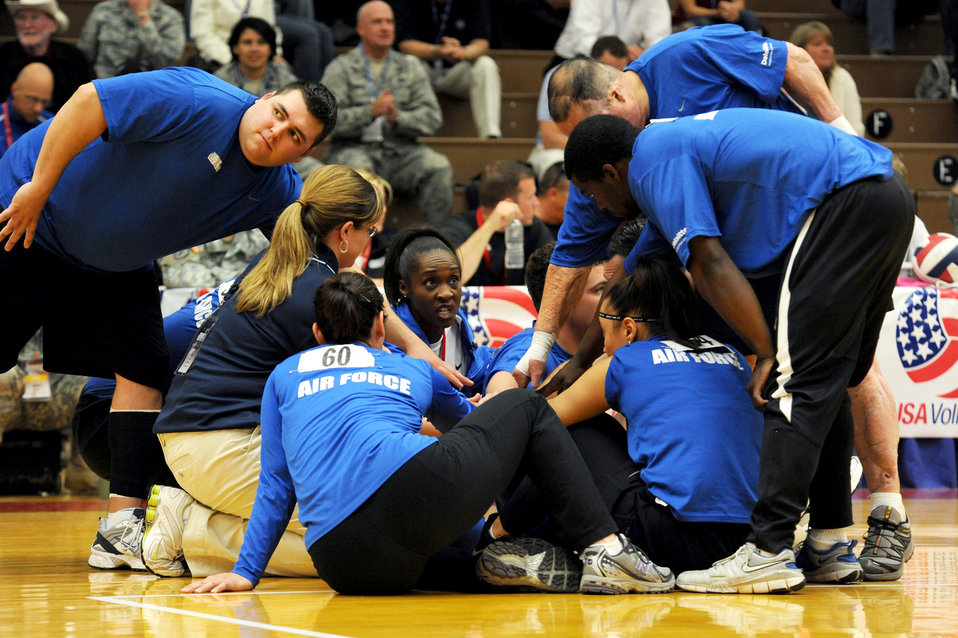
Warrior Games Volleyball

Head Coach Nicki Marino and Tech. Sgt. Elisha Abercrombie give the Air Force team a pep talk during the Warrior Games sitting volleyball match against Army at the U.S. Olympic Training Center in Colorado Springs, Colo., May 13, 2010.